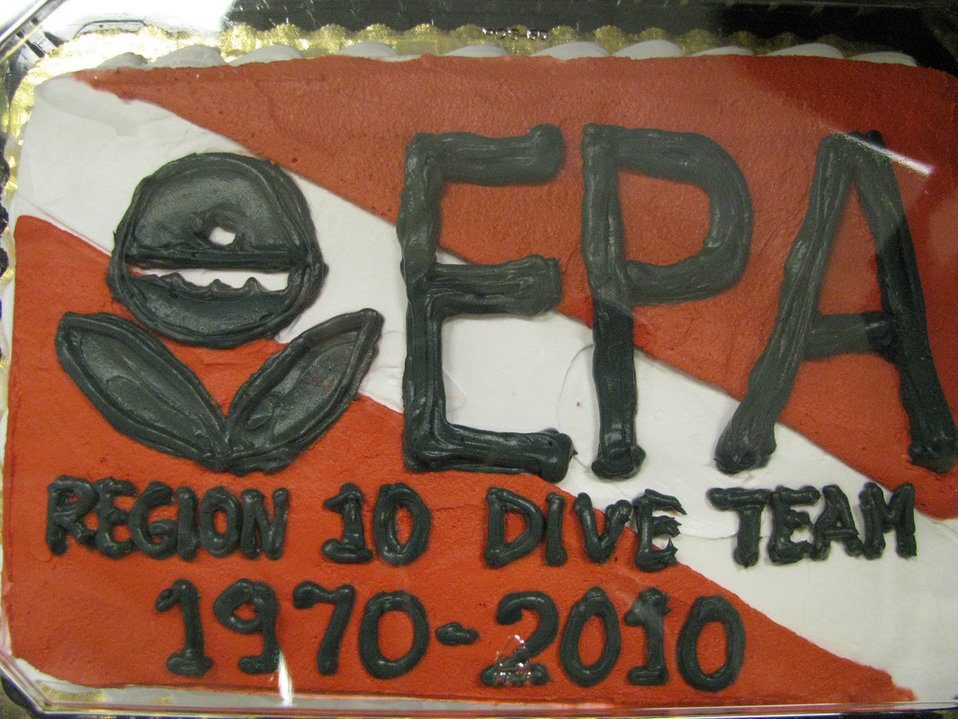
Divers need to eat! EPA Region 10 Dive 40 year anniversary 1970-2010

EPA's Region 10 office more locally serves Alaska, Idaho, Oregon, Washington, and 271 Native Tribes.

40 years of hard work studying water pollution and providing better guidance on how to clean it up deserves cake every once in a while. Though some of us are questioning where that frosting came from... see a following photo...